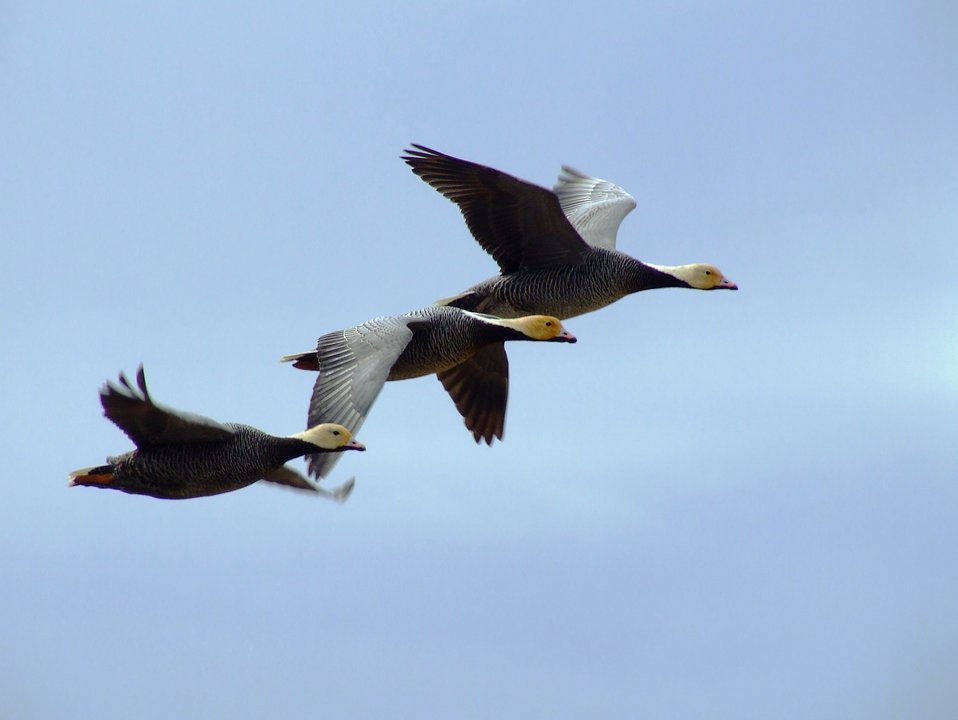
Emperor Goose Flyby

USFWS Yukon Delta NWR